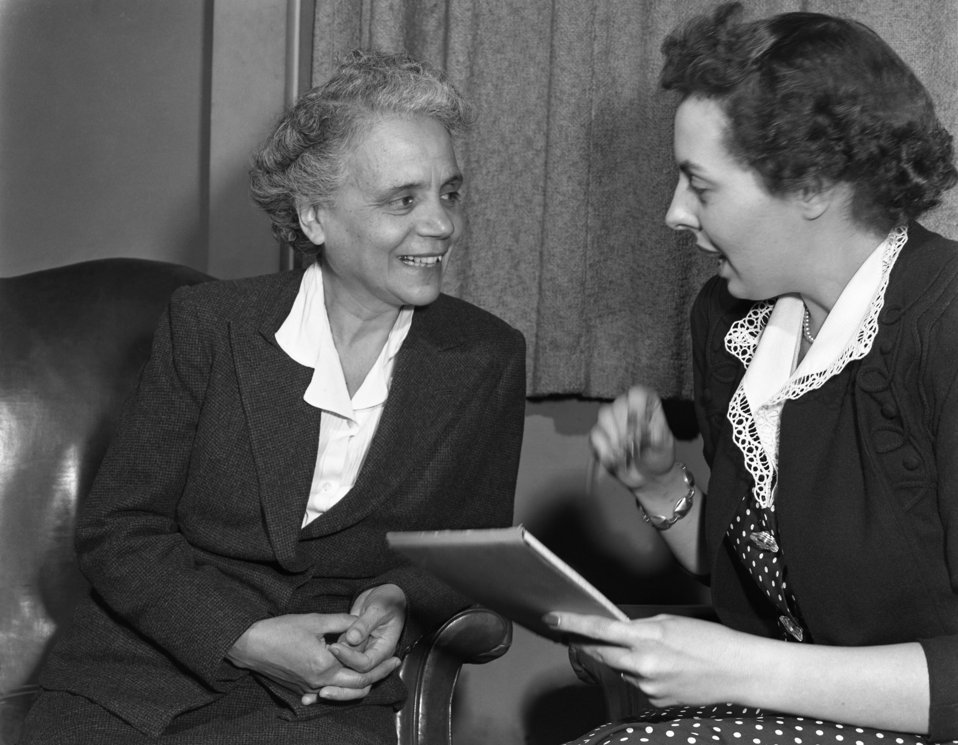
Interviewing Betty McCarthey Oak Ridge 1947

3430-4 DOE photo Ed Westcott 7-1-1947 L to R Betty McCarthey and Amelia DeBenedetti Oak Ridge Tennessee